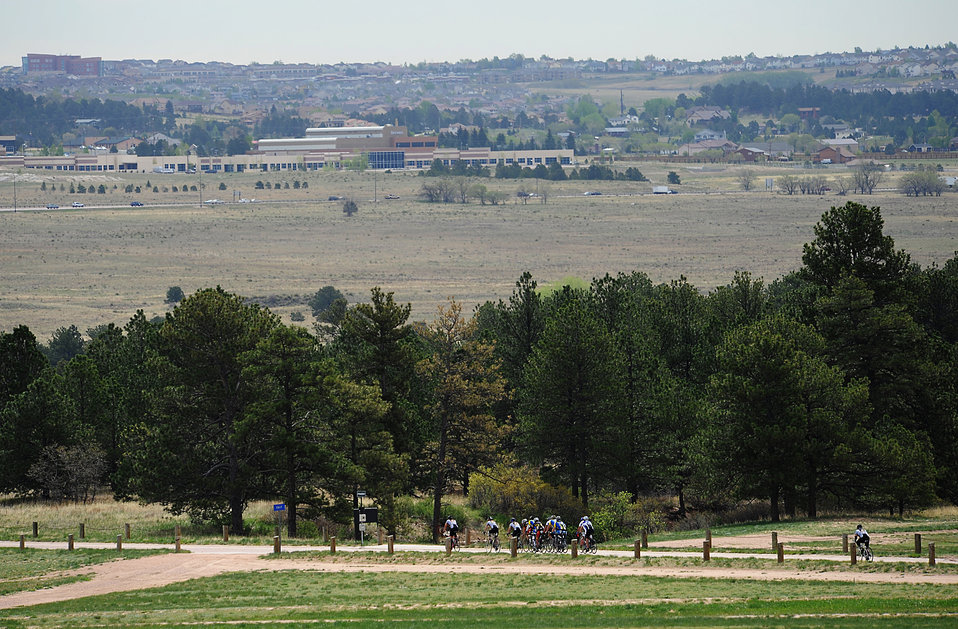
Warrior Games

Athletes take part in a cycling event during Warrior Games 2012 at the U.S. Air Force Academy in Colorado Springs, Colo., April 30, 2012.